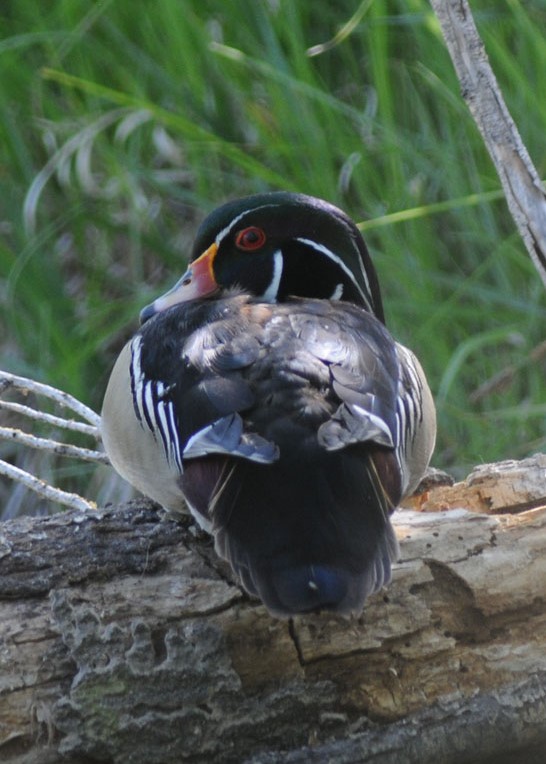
Wood Duck